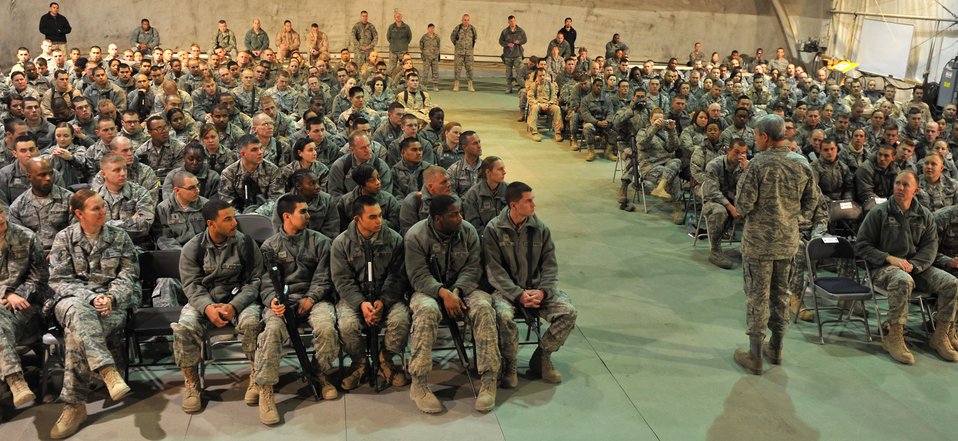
CSAF meets with Airmen during Bagram visit

Air Force Chief of Staff Gen. Norton Schwartz speaks to Airmen Jan. 19, 2011, during an “all call” at Bagram Airfield, Afghanistan. General Schwartz talked about his vision for the Air Force and answered questions from Airmen.